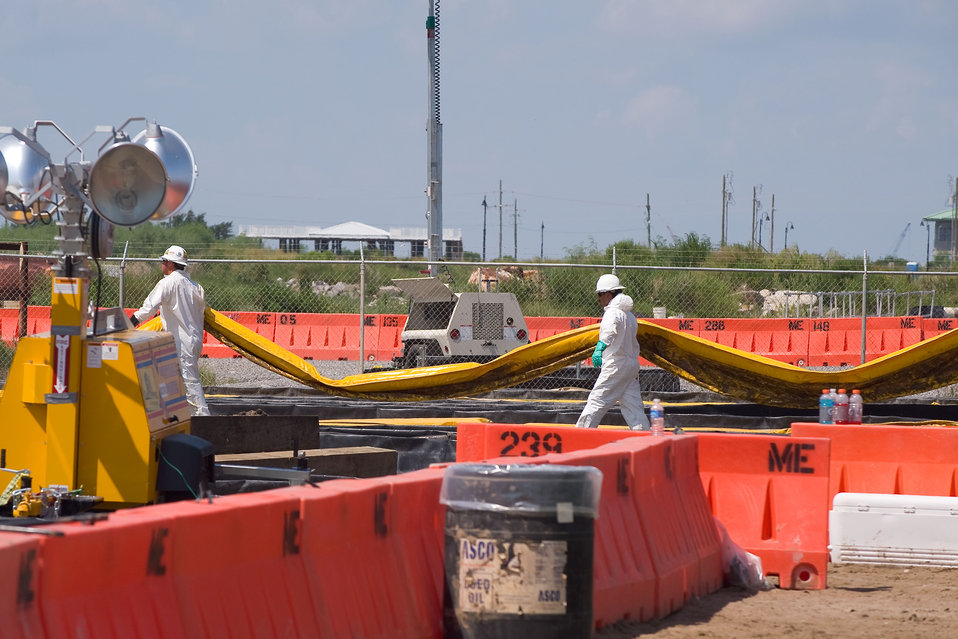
August 7, Carefully moving used oil boom for cleaning

Oiled boom is carefully brought from boats and cleanup vessels for decontamination.